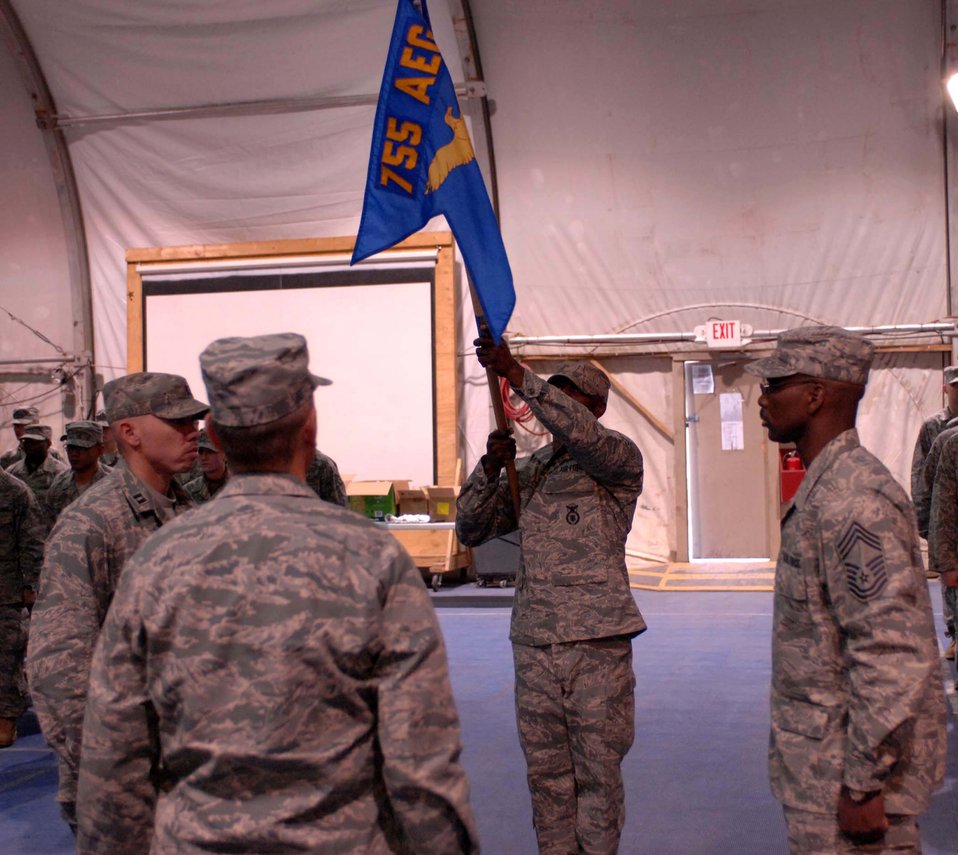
Bagram security forces Airmen pass torch as unit inactivates

The 755th Expeditionary Security Forces Squadron guidon is presented for the last time Jan. 11 at Bagram Air Base, Afghanistan. The squadron, originally formed in May 2006 in response to a Army request for support of its detainee operations mission, was inactivated during a formal ceremony Jan. 11 here.